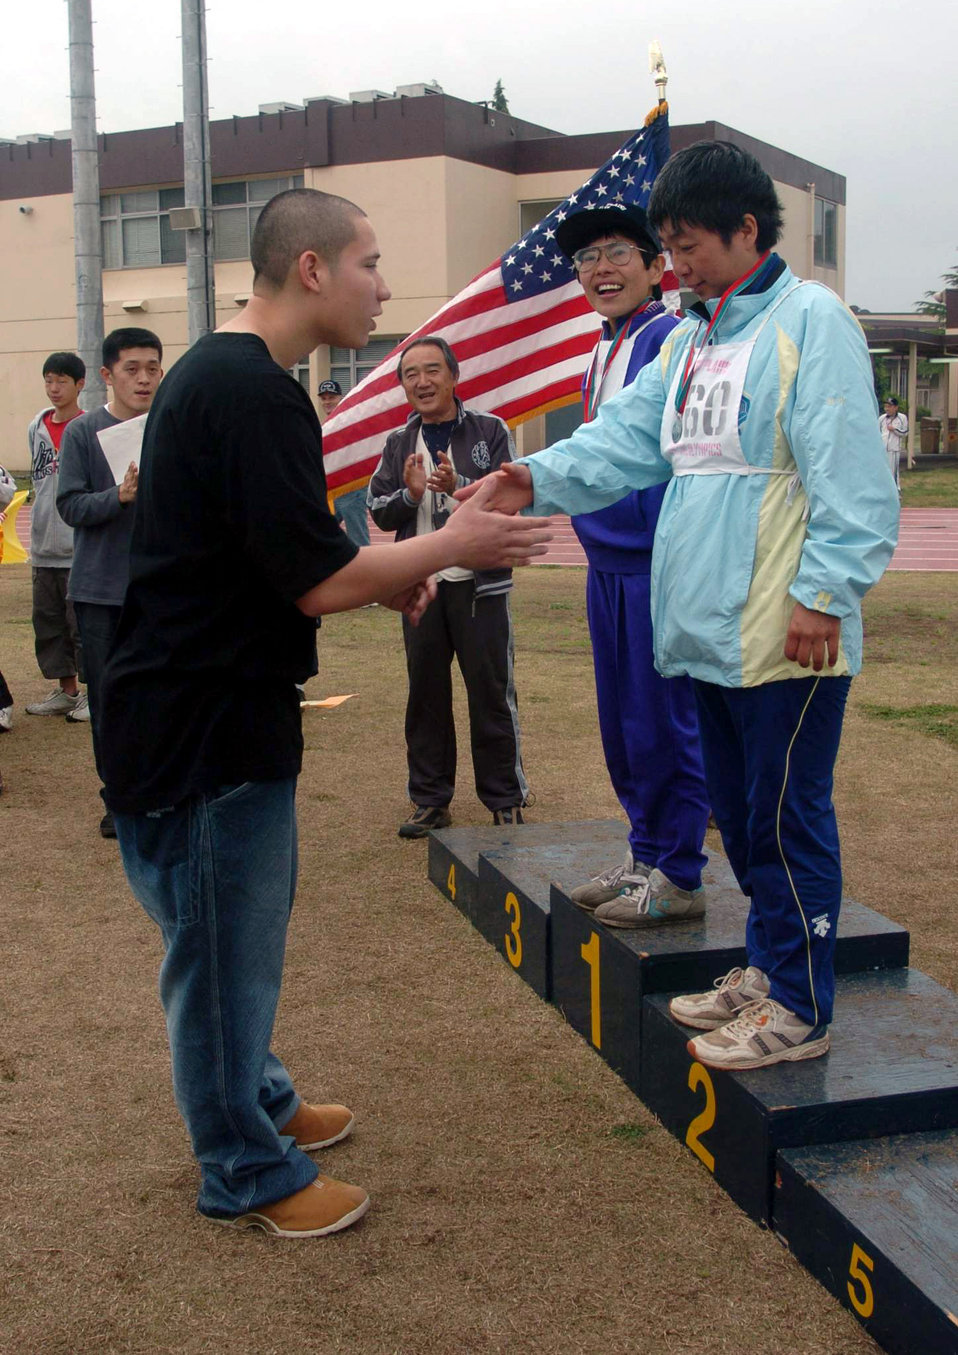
Special Olympics at Yokota

YOKOTA AIR BASE, Japan -- Airman Christian Garcia shakes hands with a Japanese athlete during a medal presentation at the 25th annual Kanto Plains Special Olympics here May 9. More than 500 athletes participated in the games. Airman Garcia is assigned to the 374th Dental Squadron.